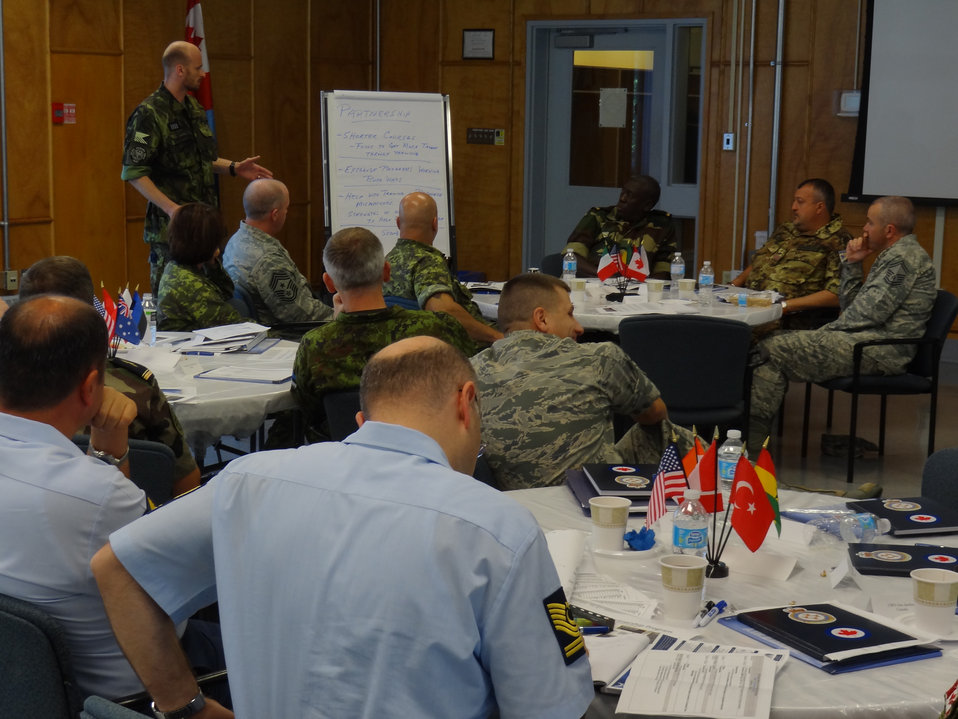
CSAF attends international summit

Master Warrant Officer Martin Chromec of the Czech Republic Air Force leads a group discussion on the importance of partnerships at the 2012 Partner Nations Summit at Canadian Forces Base Borden, Ontario, Canada, June 26, 2012.